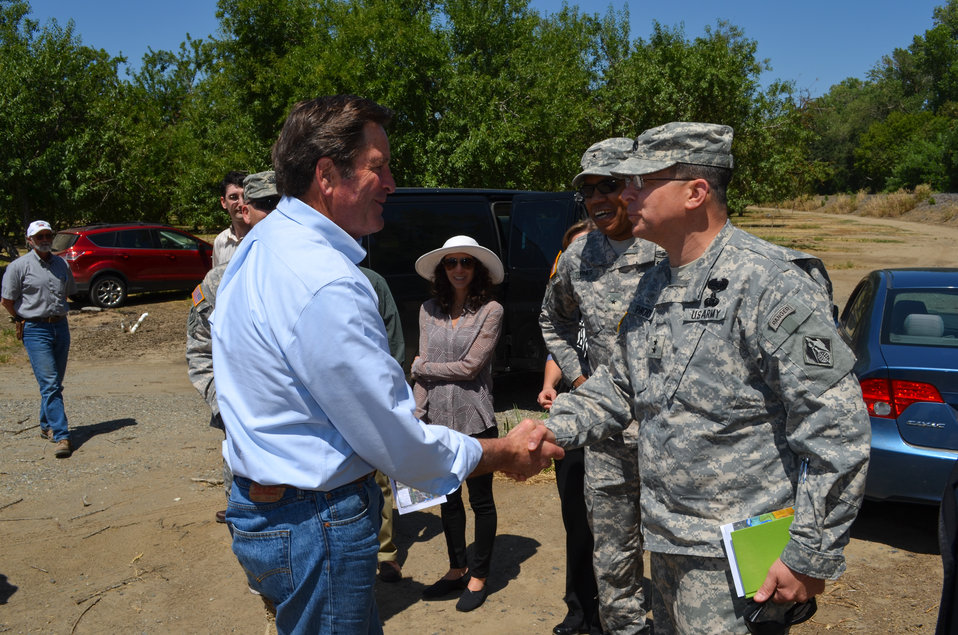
Maj. Gen. John Peabody greets U.S. Rep. John Garamendi

Maj. Gen. John Peabody, U.S. Army Corps of Engineers Deputy Commanding General for Civil and Emergency Operations (right), greets U.S. Rep. John Garamendi in Hamilton City, Calif., June 3, 2014. The Corps' Sacramento District has started a project in Hamilton City designed to let nature help do the work of reducing flood risk by restoring 1,500 acres of native habitat between the Sacramento River and a new setback levee to be built near the town.